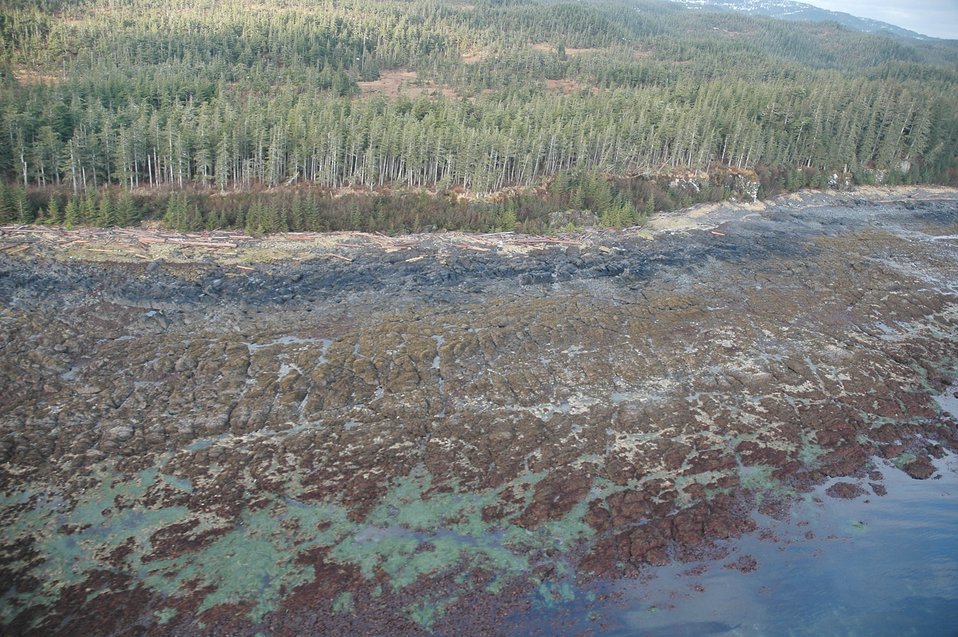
Aerial photograph. Erosion patterns in joint patterns of rocks on the shore of Montague Island with large tide pools showing at the lower limit of low tide.